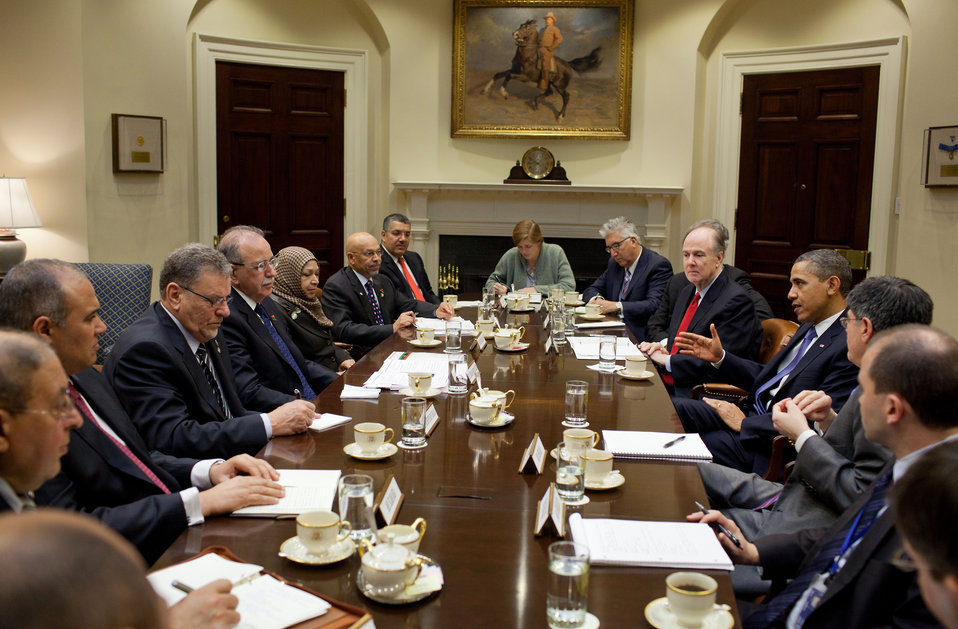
President Obama Meets With Libyan Prime Minister Dr. Abdurrahim Al-Keib

President Barack Obama meets with Prime Minister Dr. Abdurrahim Al-Keib of Libya in the Roosevelt Room of the White House in Washington, D.C., on March 7, 2012.